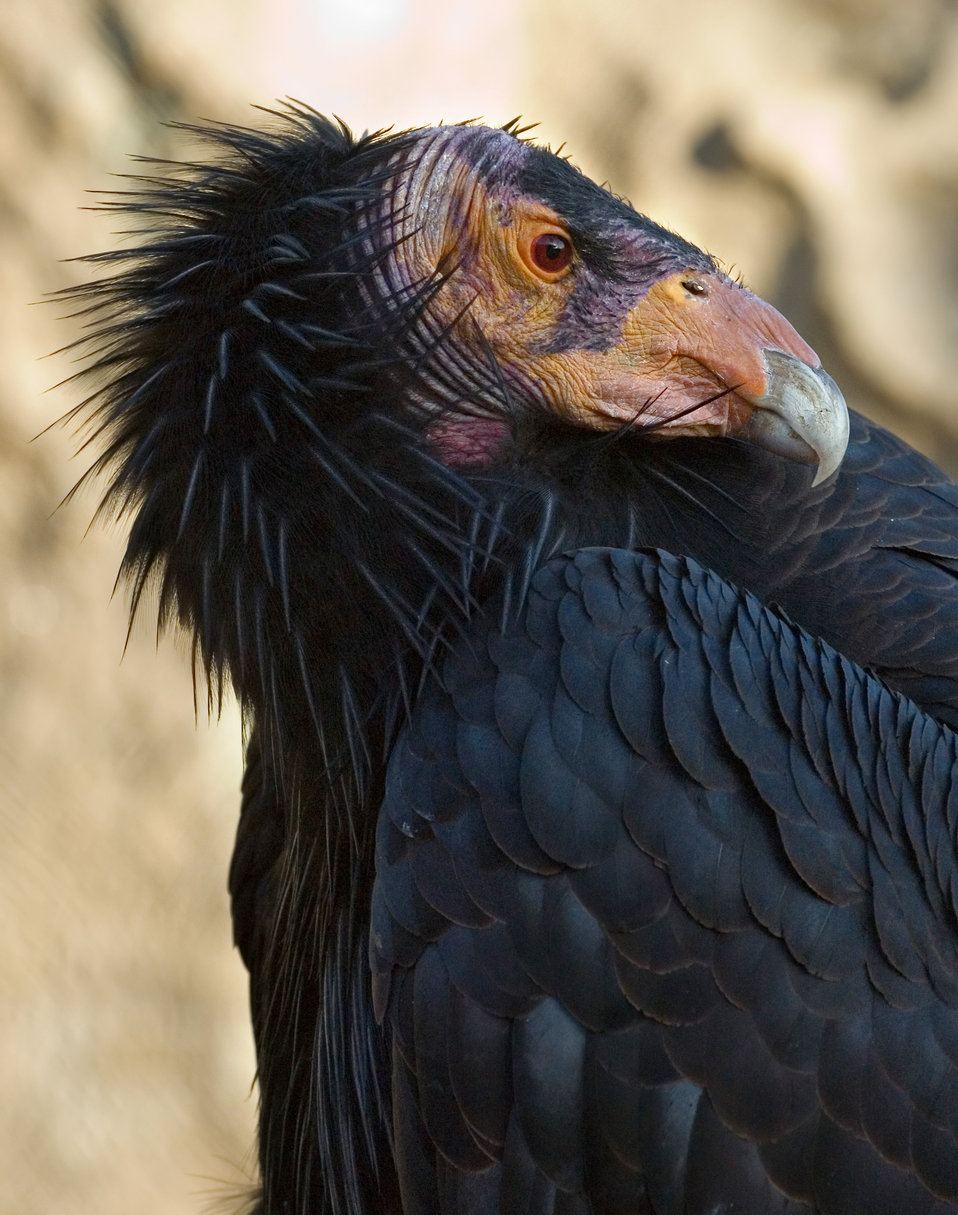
California Condor at San Diego Wild Animal Park

A California Condor at the Condor Ridge exhibit of the San Diego Wild Animal Park.